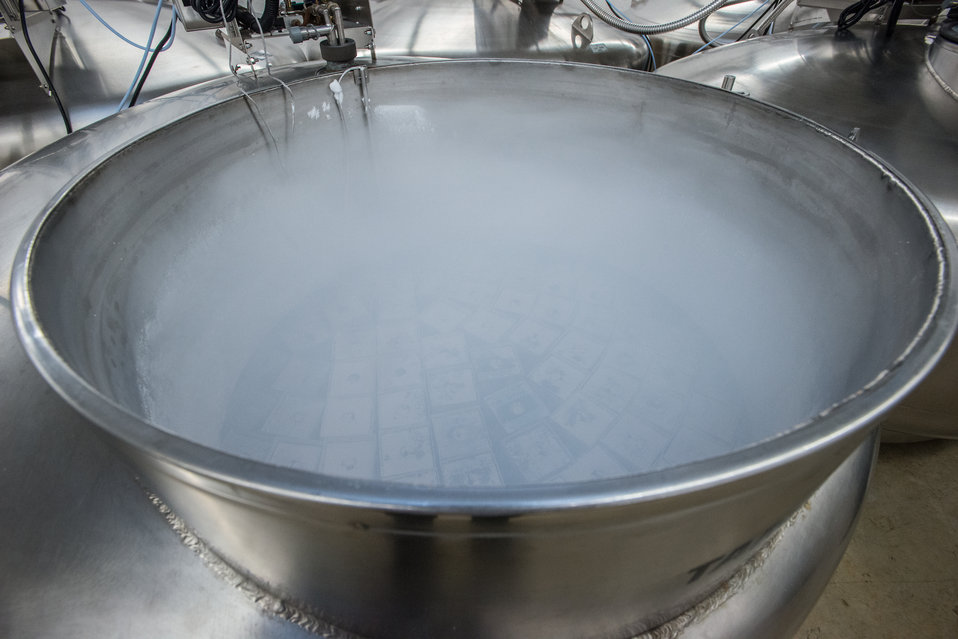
Nitrogen vapor in a cryogenic storage tank keeps seeds cold and stable at the U.S. Department of Agriculture's (USDA) Agriculture Research Service (ARS) National Center for Genetic Resources Preservation (NCGRP) in Ft. Collins, CO on Wednesday, Nov. 6, 2013. The Cryogenic Storage Vault currently operates more than 45 cryogenic tanks that hold animal germplasm, plant tissue culture, and seeds that are stored at -196 °C (-321 °F) in liquid nitrogen storage or to -193 C. (-315 °F) in vapor nitrogen storage. NCGRP is the largest agricultural genebank facility in the U.S. The NCGRP staff conduct groundbreaking research to develop efficient and effective means for preserving plant and animal germplasm.